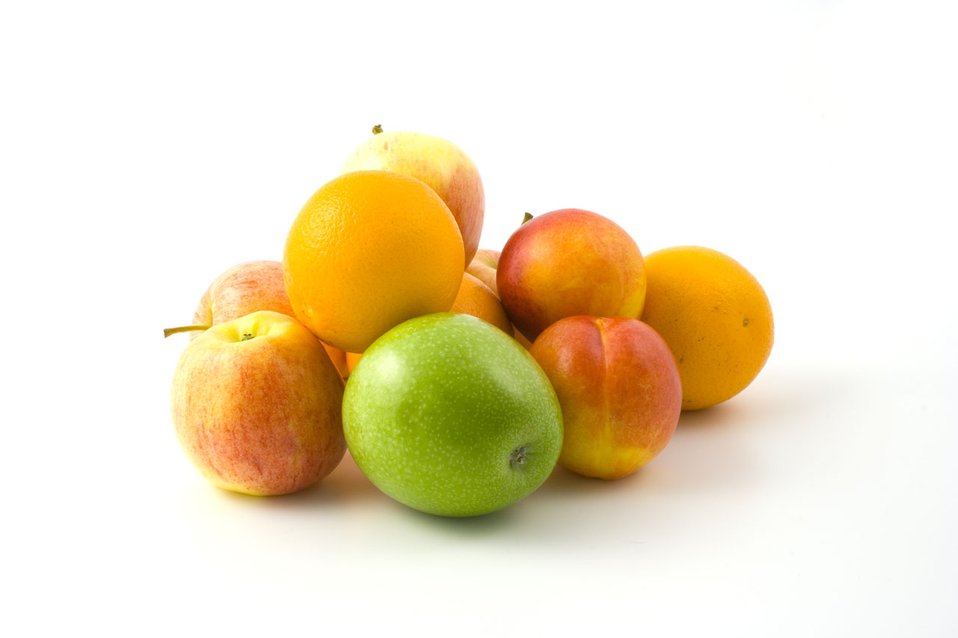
Various fruits

Various multi-colours fruits on white background..